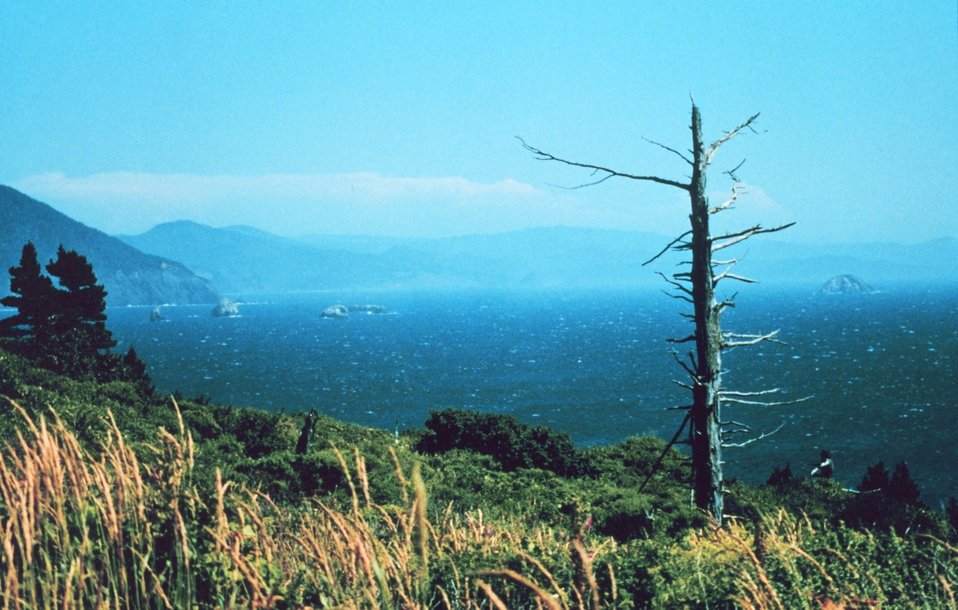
On Cape Blanco looking to the south. Port Orford is to the left out of sight.